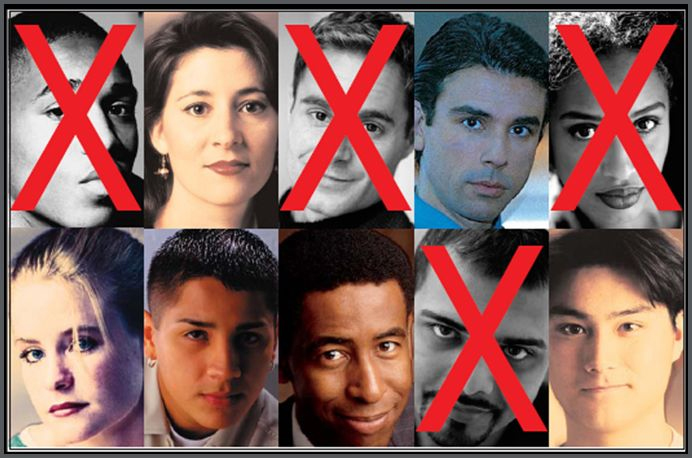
AIDS Deaths

4 out of 10 U.S. AIDS deaths are related to drug abuse.